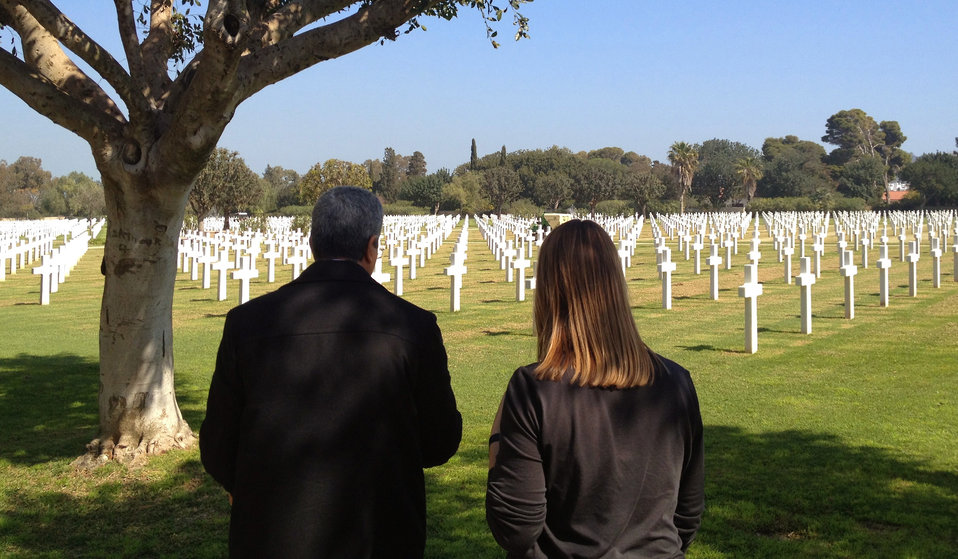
Deputy Secretary Higginbottom Visits the North Africa American Cemetery

Deputy Secretary of State for Management and Resources Heather Higginbottom visits the North Africa American Cemetery and Memorial in Tunis, Tunisia, on March 18, 2014.